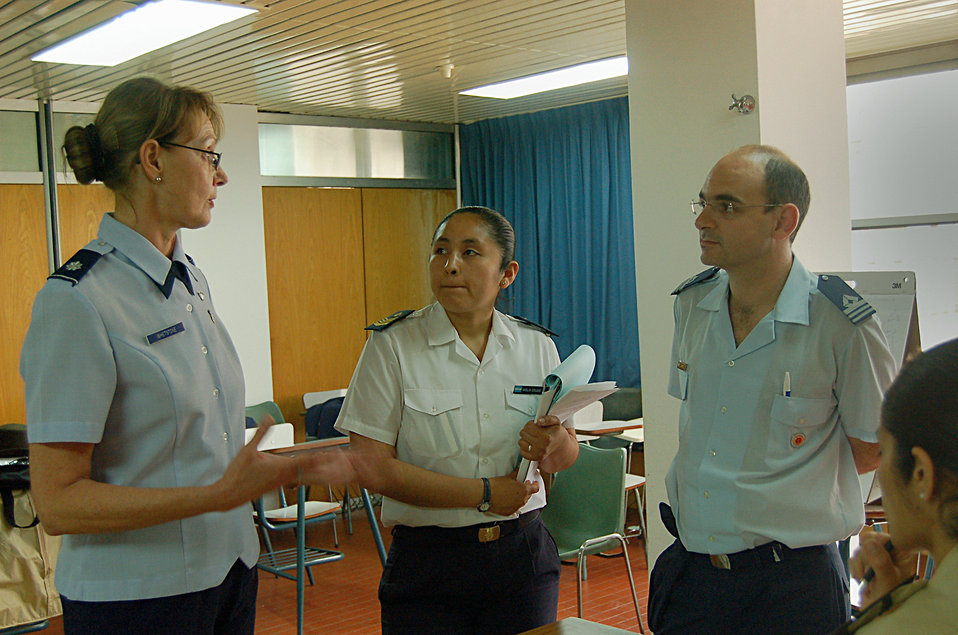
Forces combine to share disaster response techniques

Lt. Col. Meleah Whetstone shares ideas with her Argentinean military medical counterparts during a table-top disaster response exercise Nov. 5 in Buenos Aires, Argentina. Colonel Whetstone is an individual mobilization augmentee nurse practitioner at Nellis Air Force Base, Nev.